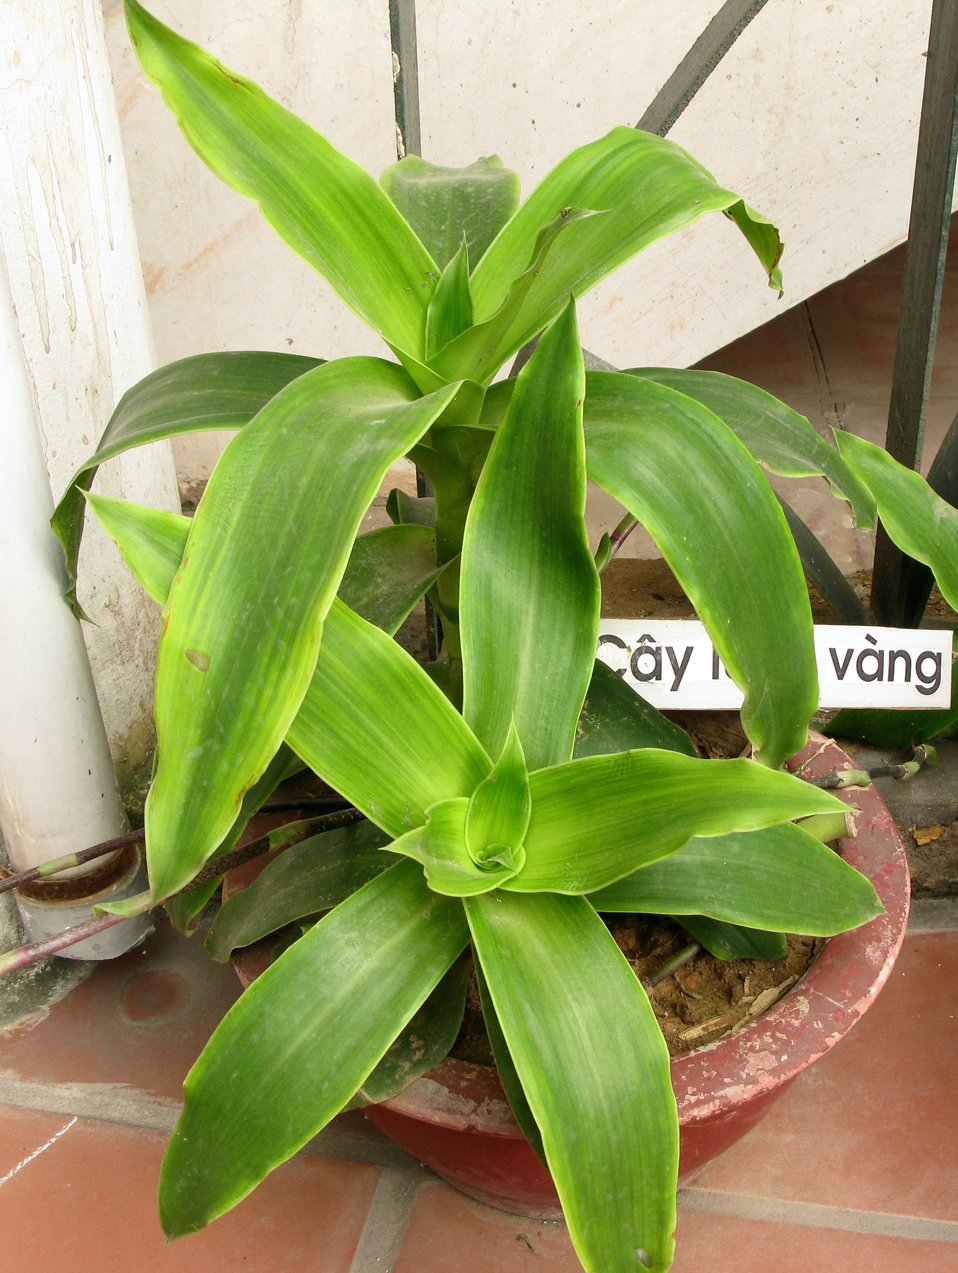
Callisia fragrans Tiếng Việt: Cây lược vàng